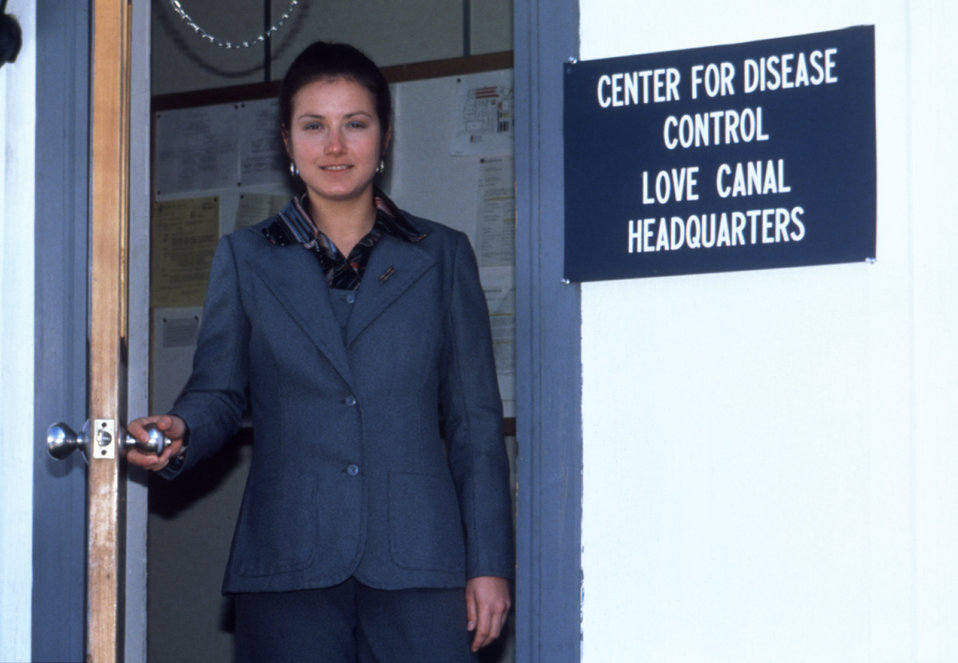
This CDC employee was temporarily staffed at the laboratory investigation headquarters in Love Canal, New York, 1981.